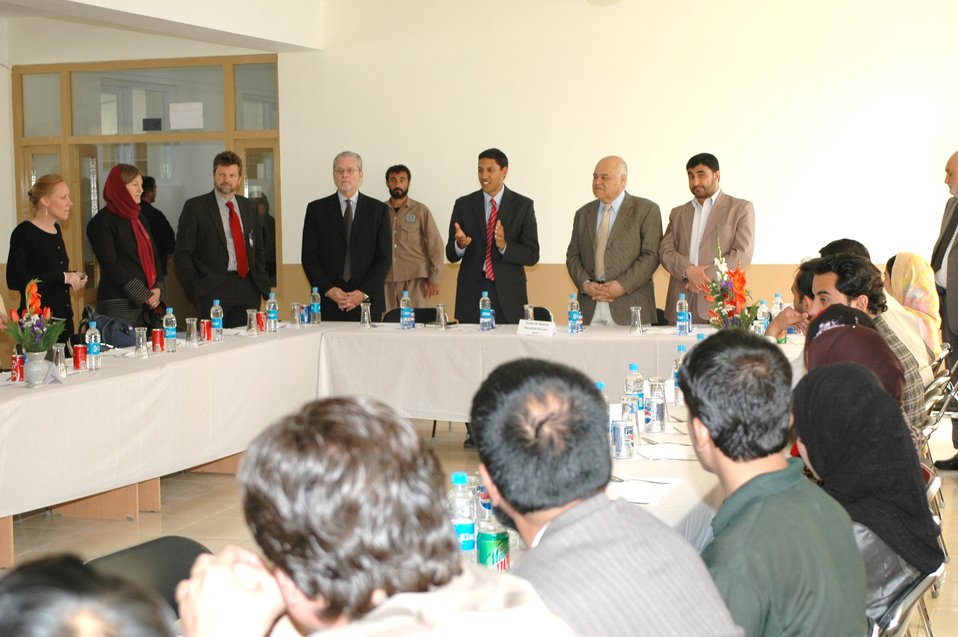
Dr Shah Visits Votech in Kabul